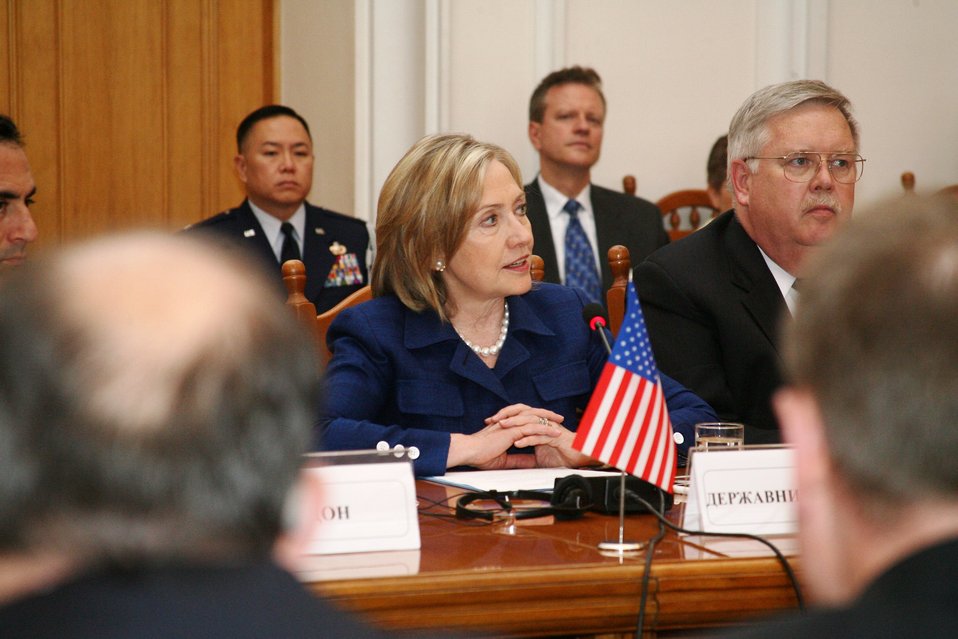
Secretary Clinton Meets Participates in the Strategic Partnership Commission Discussion

U.S. Secretary of State Hillary Rodham Clinton participates in the Strategic Partnership Commission discussion in Kyiv, Ukraine, on July 2, 2010.